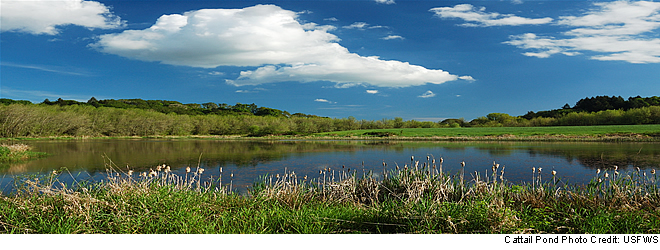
Cattail Pond - William L Finley NWR

Cattail Pond is one of several ponds on the Refuge used by wintering waterfowl, wading birds and shorebirds.